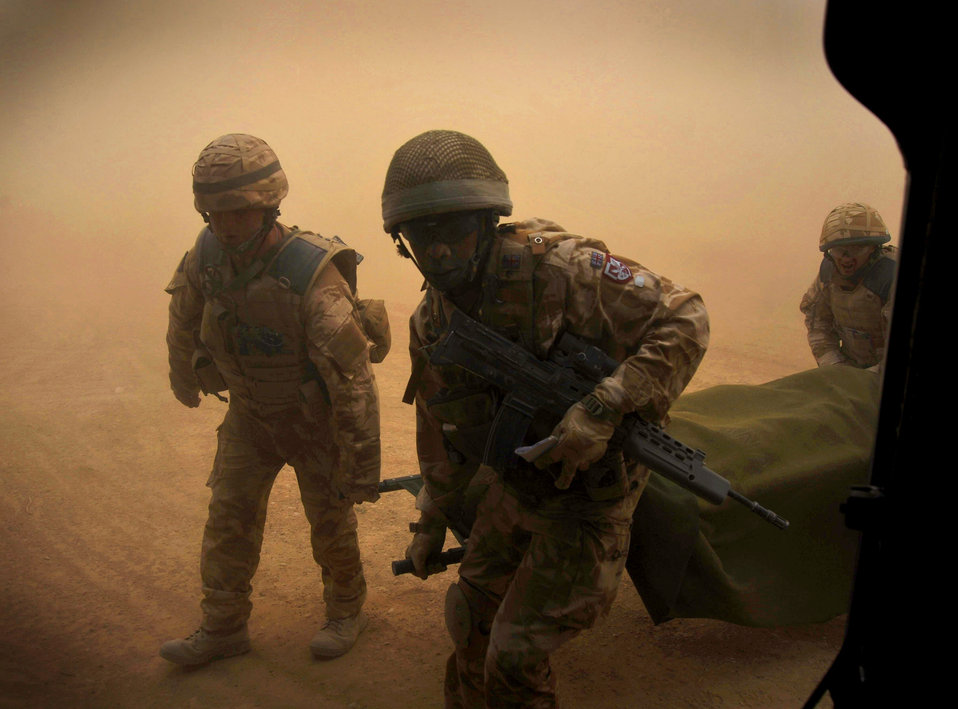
Pararescuemen receive an injured patient from Coalition Forces

U.S. Air Force Pararescuemen from the 66th Expeditionary Rescue Squadron deployed to Camp Bastion, Afghanistan, receive an injured patient from Coalition Forces, Dec. 8, 2009. The pararecuemen will administer medical care while in transit to a medical facility.